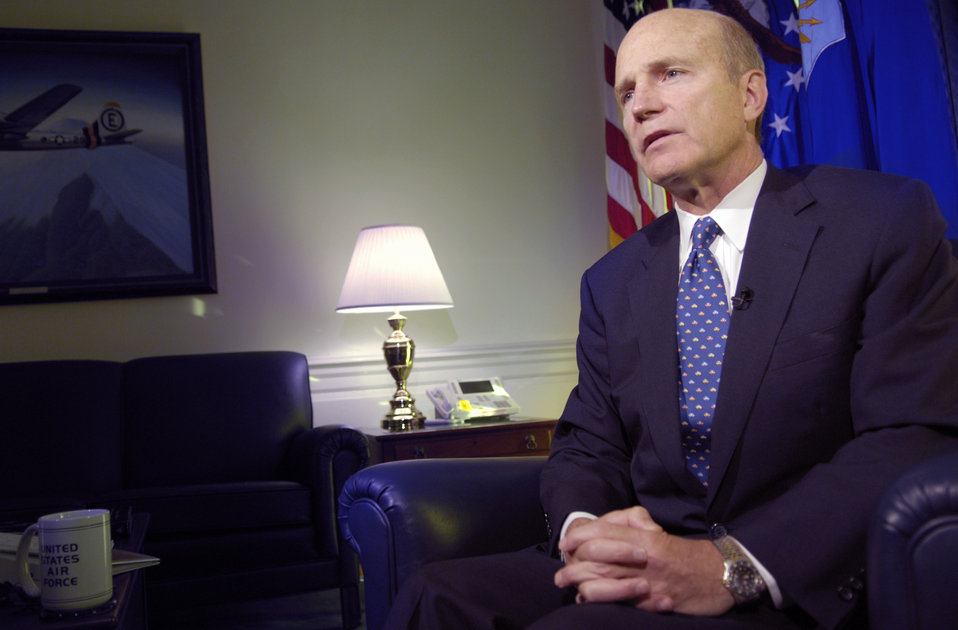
Geren: People, equipment top Air Force priorities

WASHINGTON -- During an interview in his Pentagon office, acting Secretary of the Air Force Pete Geren summarizes his top priorities for the Air Force on Sept. 7. He said that for him the top priority for all senior Air Force leaders is to meet the needs of the people in the Air Force, and that continuing to invest in Airmen will ensure they stand ready to face the demands placed on them.